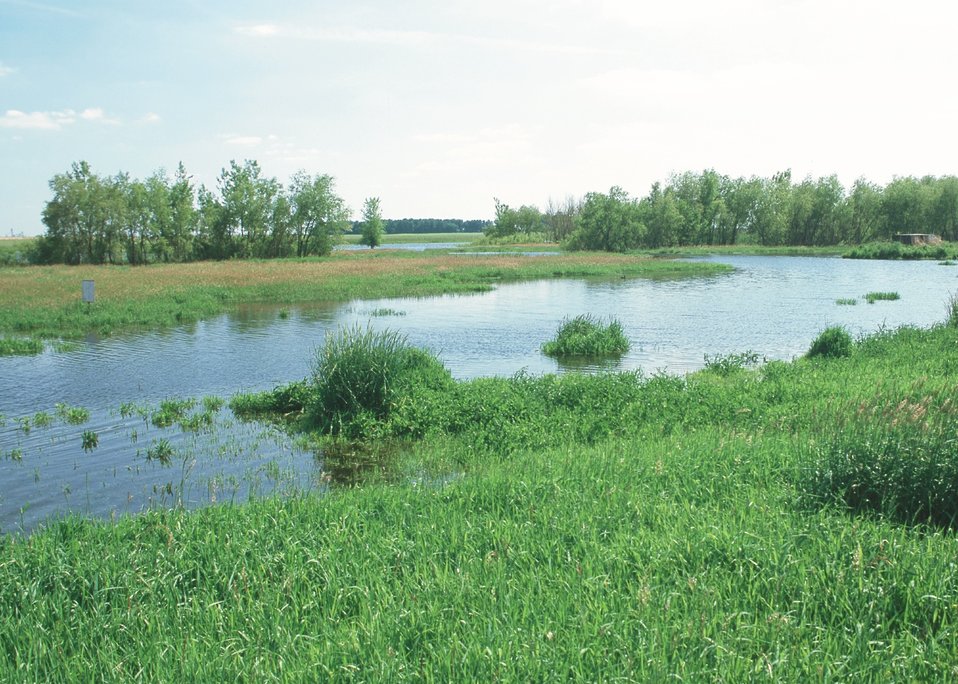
Wetland sites like this one provide outdoor recreation opportunities including bird watching and hunting.